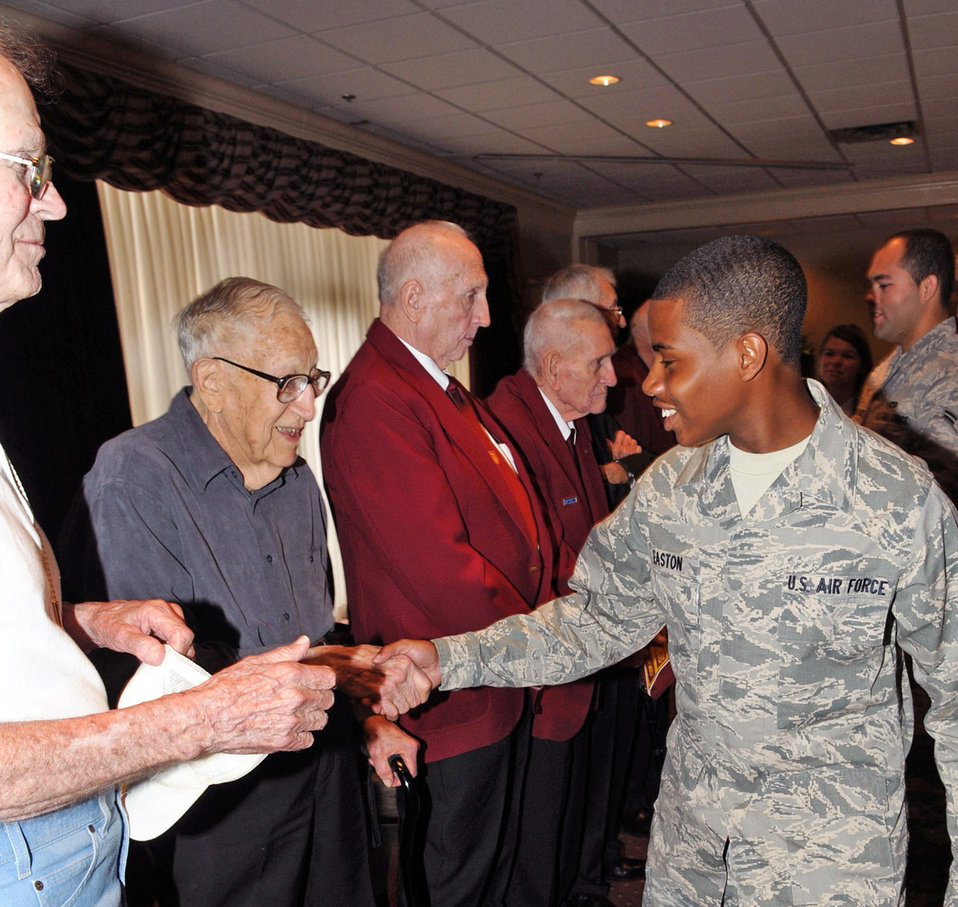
Airmen greet former prisoners of war Sept. 17, 2010 at the Tinker Air Force Base Club during POW/MIA Recognition Day. The men visited Tinker AFB for a breakfast in their honor and shared their stories of war and captivity with the Airmen. The POWs represented veterans from World War II, the Korean War and Vietnam. Hunger, brutality and finally return, were common threads in their stories.